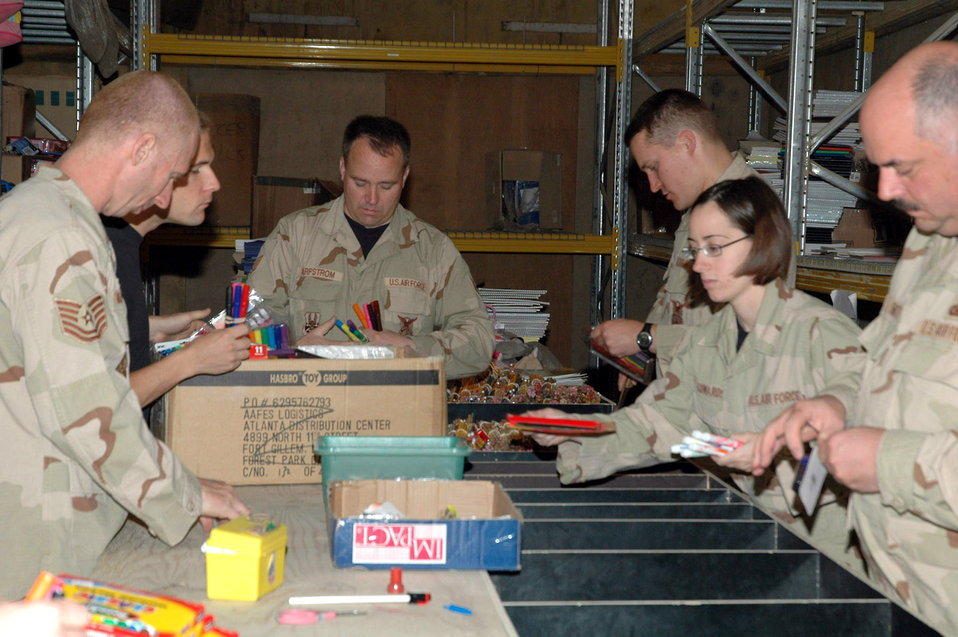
Making Iraq's future brighter: Operation School Supplies

Volunteers sort through school supplies dontated by individuals and organizations in the U.S. for Operation School Supplies at Kirkuk Air Base, Iraq. The volunteers from the 506th Air Expeditionary Group, sorted, organized and delivered almost 5,000 pounds of school supplies since arriving in January.